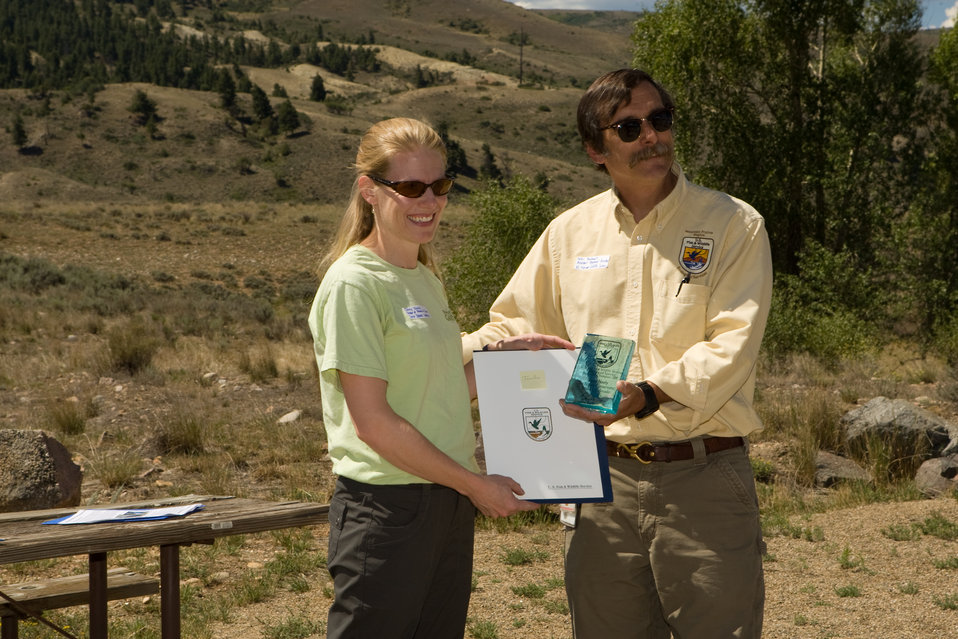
Colorado Rare Plant Conservation Initiative

The Colorado Rare Plant Conservation Initiative (RPCI) is a partnership of 23 statewide and regional agencies, private organizations, and academic institutions working to conserve 121 rare plants in Colorado. As part of these efforts the group developed the Colorado Rare Plant Conservation Strategy, developed Best Management Practices to reduce energy development impacts, addressed climate change, and developed focused strategies for the conservation of individual species at eight priority landscapes. The group has also worked to coordinate volunteer efforts for plant conservation across the state.